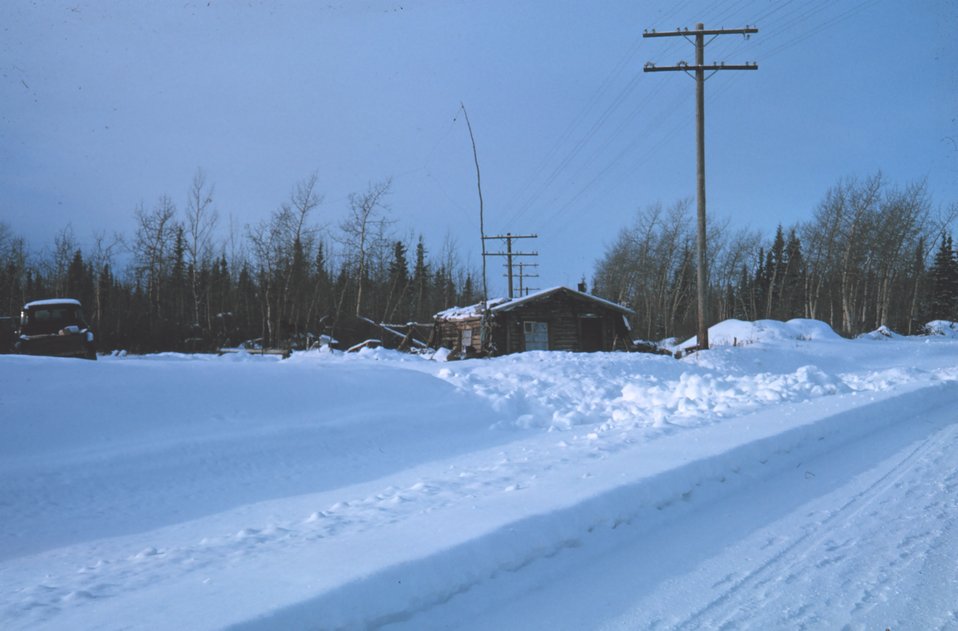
Station Number 109